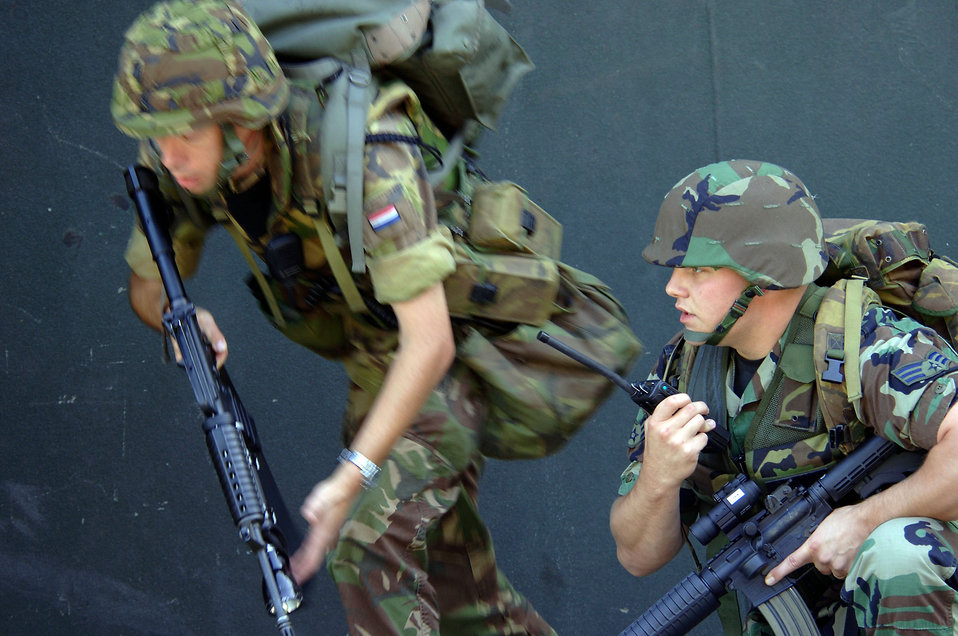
Munitions troops help give Dutch fighters a strike punch

VOLKEL AIR BASE, Netherlands -- Dutch air force Cpl. Wilco Laar (left) and Senior Airman Stephan Herrington secure an F-16 Fighting Falcon hangar during an exercise here. Responding to alarms is one of the routine exercises American and Dutch security forces here do numerous times a quarter. Corporal Laar is assigned to the1st Fighter Wing, and Airman Herrington is assigned to the 703rd Munitions Maintenance Squadron.